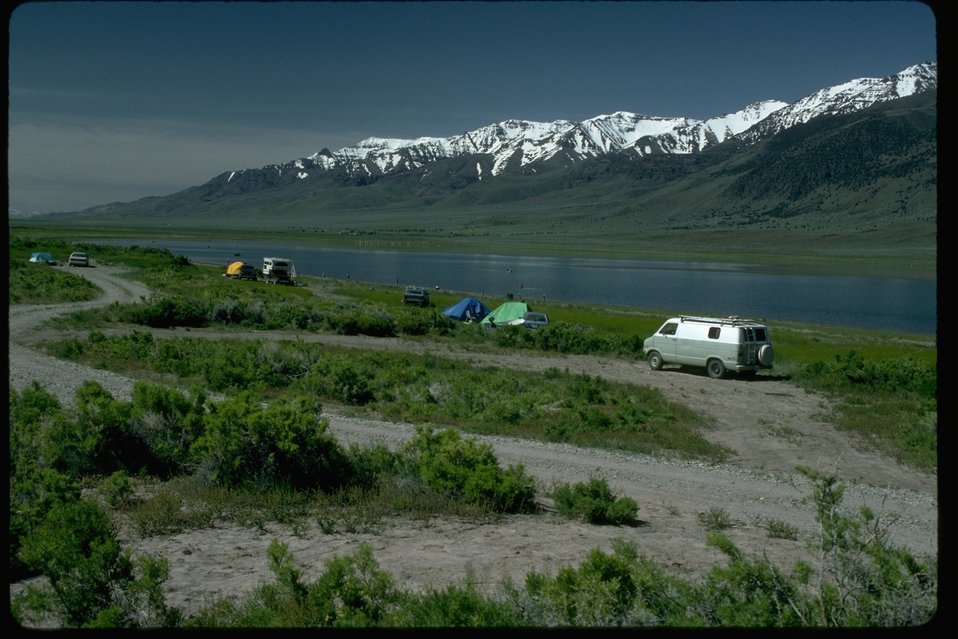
Camping and fishing at Mann Lake on the East side of Steens Mountain in Southeastern Oregon.